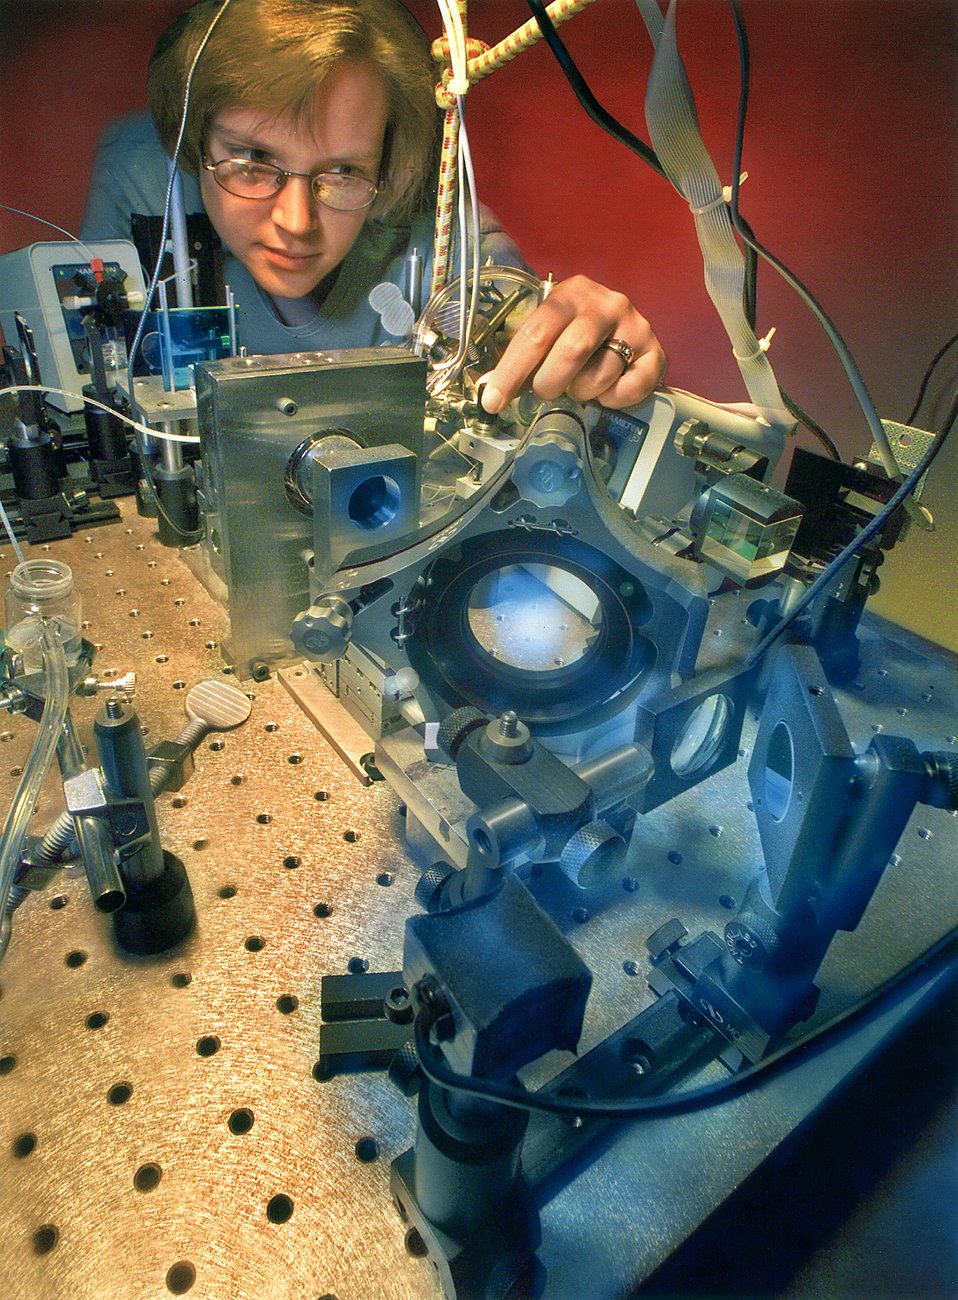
ADVANCED DNA EXPERIMENTATION AT LAWRENCE BERKELEY NATIONAL LABORATORY.

IN AN OPTICAL TWEEZERS SETUP, A LASER BEAM FOCUSED THROUGH A HIGH-APERTURE MICROSCOPE LENS TRAPS A MICRON-SIZED POLYSTYRENE SPHERE THAT HAS BEEN TETHERED TO A SINGLE DNA OR RNA POLYMERASE MOLECULE. HERE, POST DOCTORAL RESEARCHER NANCY FORDE USES BLUE LIGHT TO ILLUMINATE THE FLOW CHAMBER OF THE APPARATUS IN ORDER TO CAPTURE IMAGES WITH A CD CAMERA.